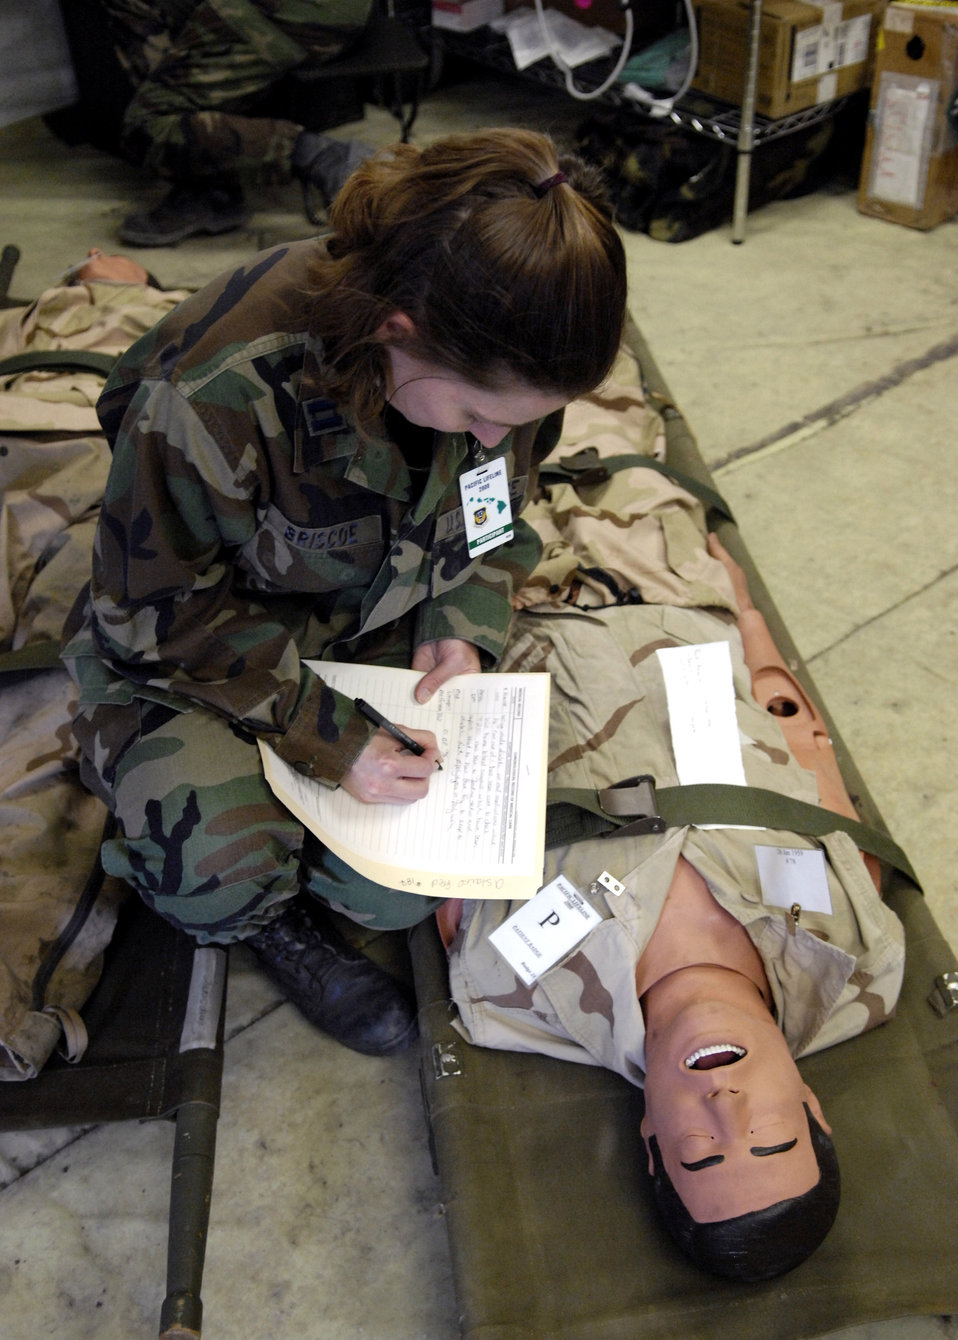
Providing a lifeline

Capt. Rebekah Briscoe talks with a simulated patient during Exercise Pacific Lifeline Feb. 5 at Kona International Airport, Hawaii. Captain Briscoe is a family practice physician with the 3rd Medical Group at Elmendorf Air Force Base, Alaska. Pacific Lifeline is a total force exercise staging from three locations within the Hawaiian Islands. It provides approximately 900 Department of Defense members a test environment to rapidly deploy and provide time-critical services in the wake of a simulated natural disaster.